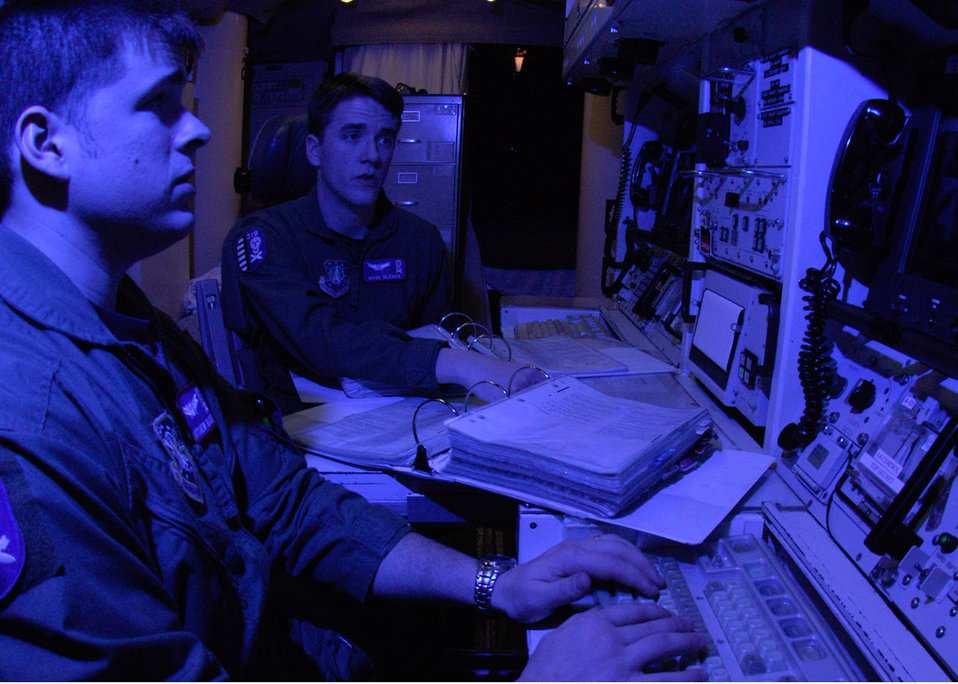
Keeping Watch

First Lt. Matthew Bejcek (front) and Capt. Mark Olenick keep watch over multiple Minuteman III intercontinental ballistic missiles from their launch control center Feb. 7. They are missile combat crew members with the 90th Space Wing at F.E.Warren Air Force Base, Wyo.